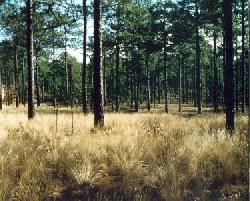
SC Carolina Sandhills National Wildlife Refuge